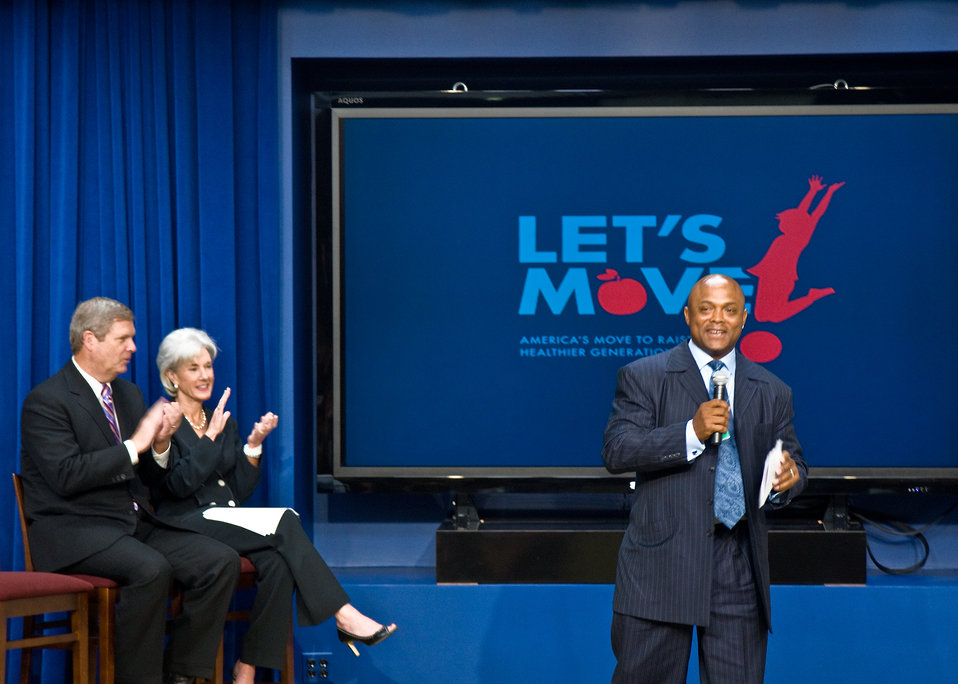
Agriculture Secretary Tom Vilsack and Health and Human Services Secretary Kathleen Sebelius listen as former Washington Redskins Running Back Brian Mitchell speaks of the importance of childhood nutrition as they honor the Winners of The Apps for Healthy Kids competition at the White House in Washington, DC, on Wednesday, September 29, 2010. The Apps for Healthy Kids competition is part of First Lady Michelle Obama’s Let’s Move campaign to end childhood obesity within a generation. The competition challenges software developers, game designers, students and other innovators to develop fun and engaging software tools and games to urge children, especially “tweens” (children ages 9-12) – directly or through their parents – to eat better and be more physically active. The applications are software tools or games for the web, personal computer, mobile handheld device, console or any software platform available to the public. USDA Photo 10di1506-55 by Bob Nichols